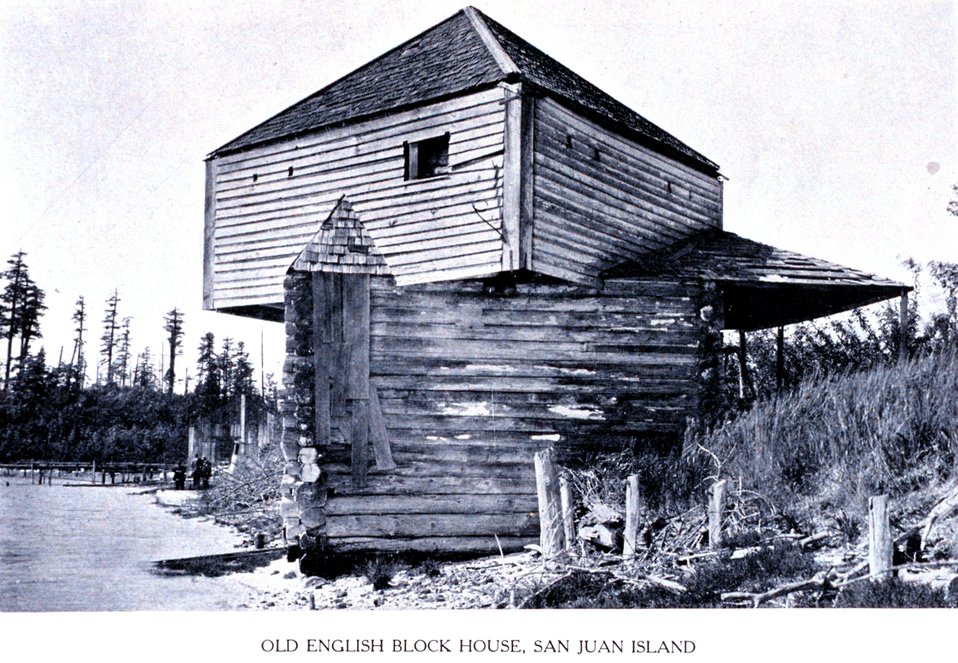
An 'Old English Block House, San Juan Island'. In: 'Puget Sound and Western Washington Cities-Towns Scenery', by Robert A. Reid, Robert A. Reid Publisher, Seattle, 1912. P. 15.